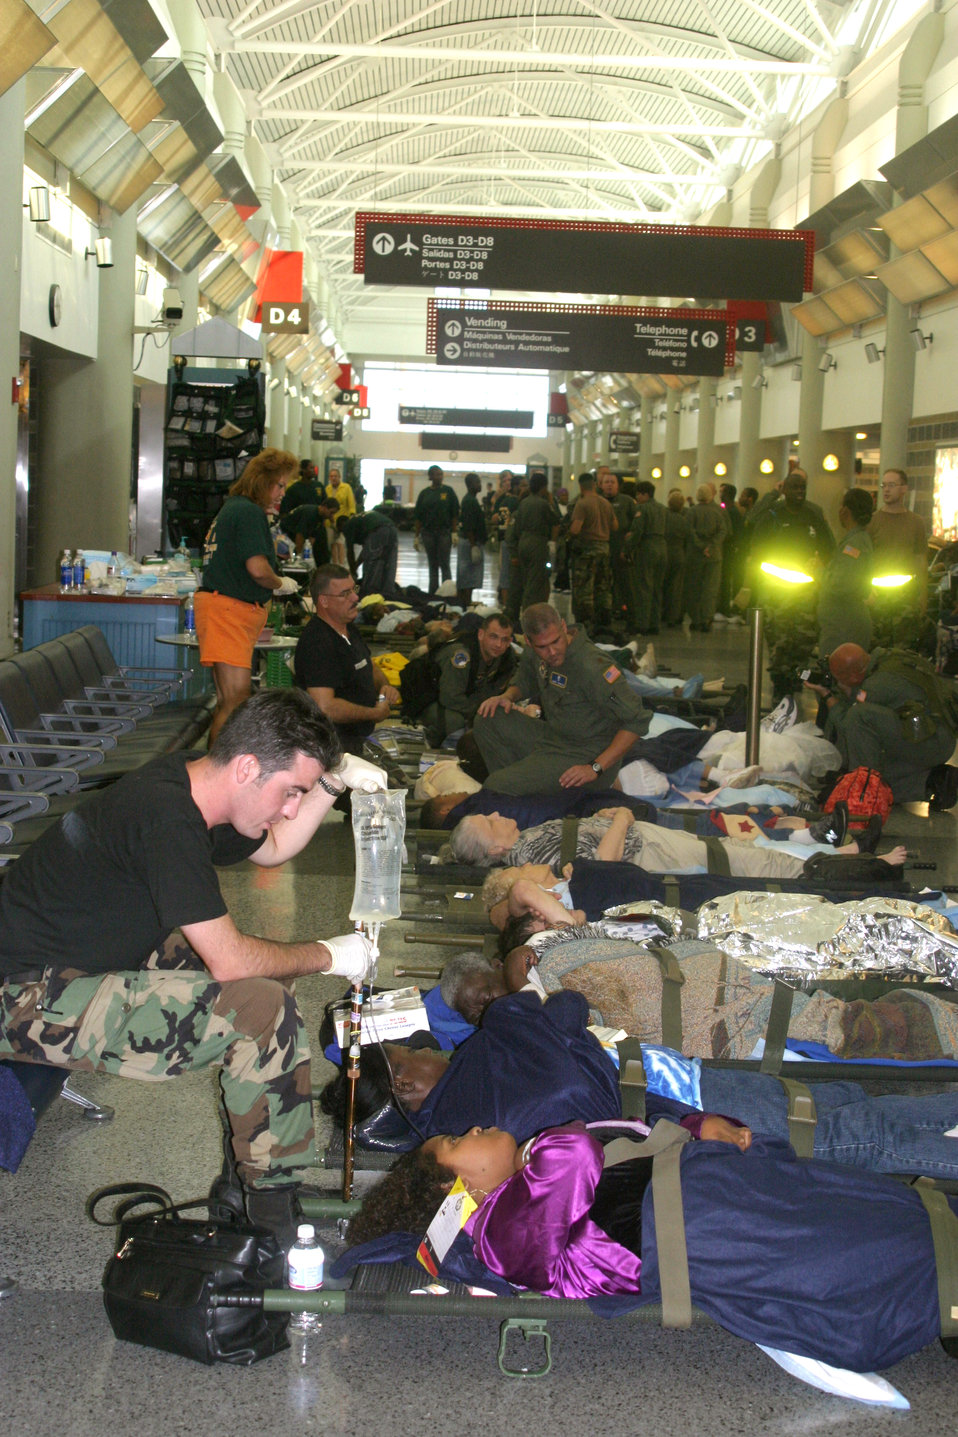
Hurricane relief mission

LOUIS ARMSTRONG NEW ORLEANS INTERNATIONAL AIRPORT, La. -- Air Force medics tend to patients awaiting airlift. C-130 Hercules crews from the 50th Airlift Squadron at Little Rock Air Force Base, Ark., teamed up with Airmen from the 452nd Aeromedical Evacuation Squadron at March Air Reserve Base, Calif., to relocate sick and injured patients devastated after Hurricane Katrina.